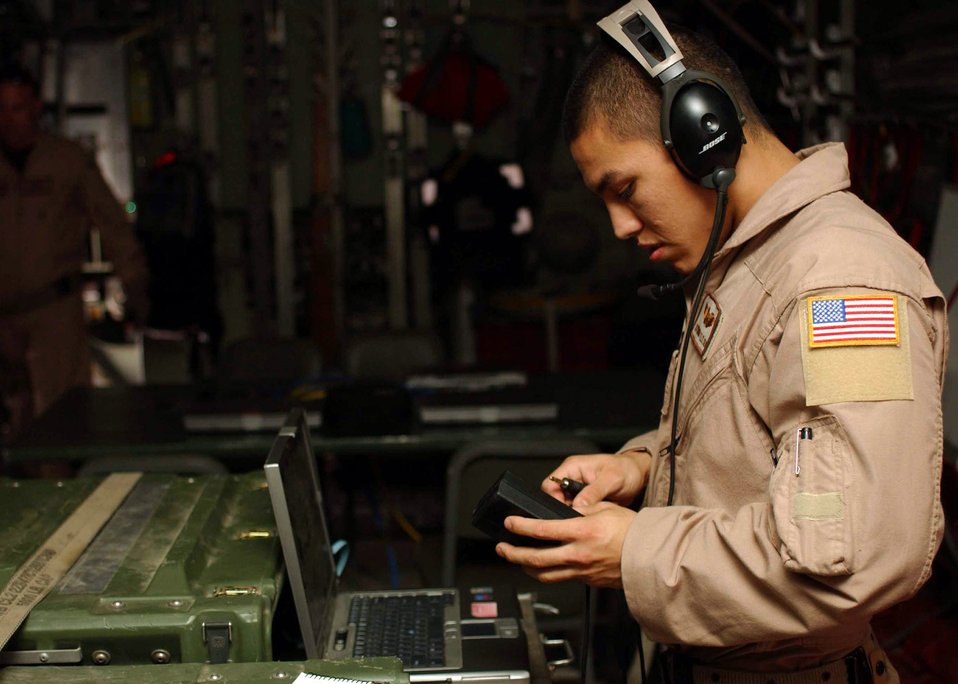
Airborne staff connects ground forces

Senior Airman Raymond Felix checks over his communications gear before taking off on a Joint Airborne Battle Staff mission over Iraq. While they fly, joint service battle staff members monitor several radio channels at a time, listening in on coalition convoys on the ground and relaying radio calls when necessary, ranging from routine radio checks to medical evacuation requests. Airman Felix is a communications technician with the battle staff.